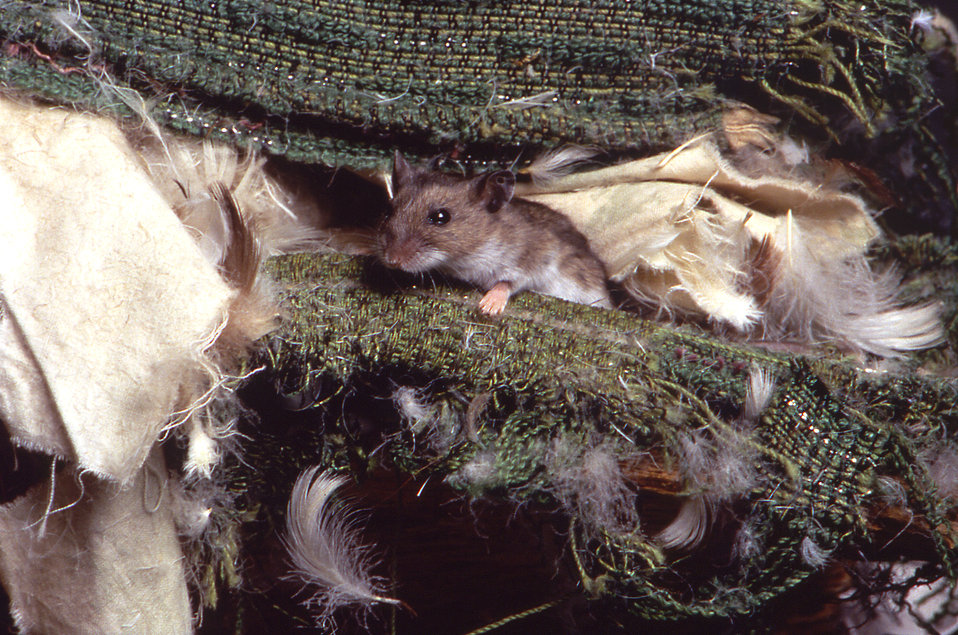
This image depicts a deer mouse, Peromyscus maniculatus which had made its home amongst deteriorating sheets of fabric and bird feathers.